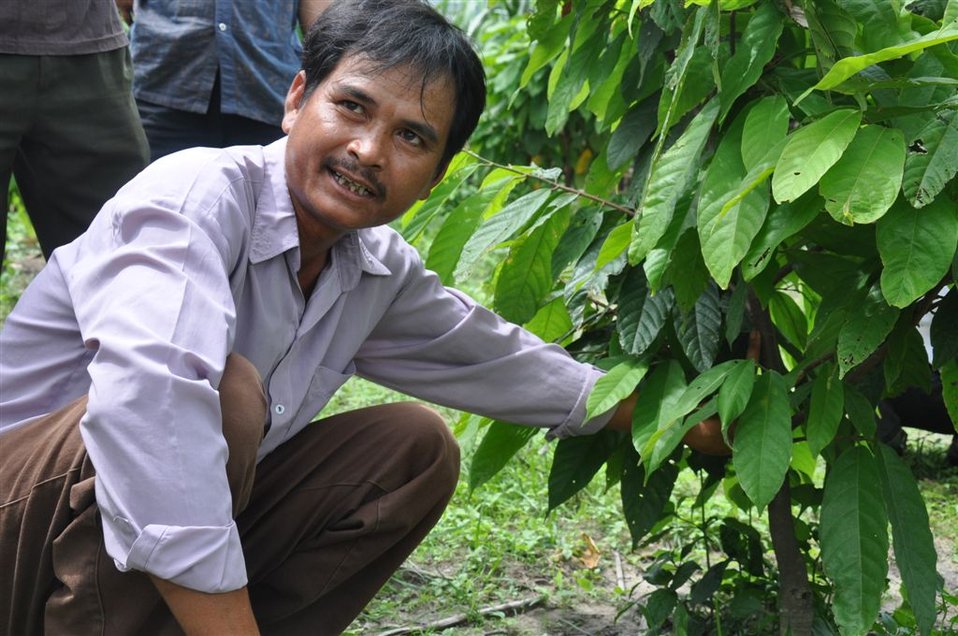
Local populations benefit from new cocoa crop techniques and market access.